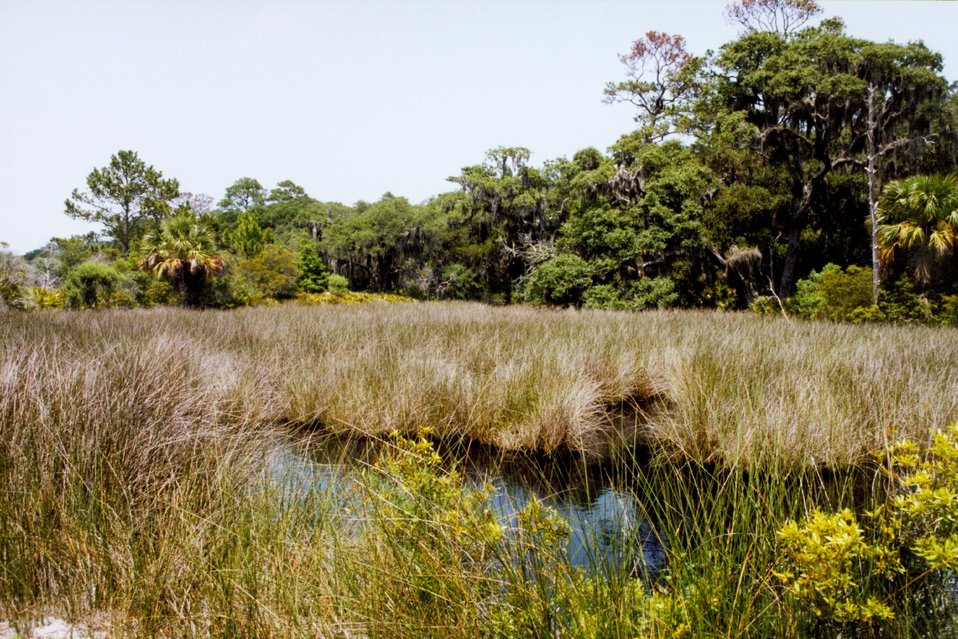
Looking over a tidal wetland area to oak and palmetto forest.